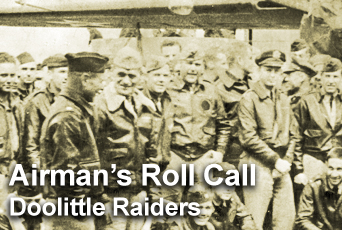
Airman's Roll Call highlights Doolittle Raiders

The latest Airman's Roll Call highlights the Doolittle Raiders, who are reuniting in San Antonio April 17 to 20 to remember the 65th anniversary of their historic flight.